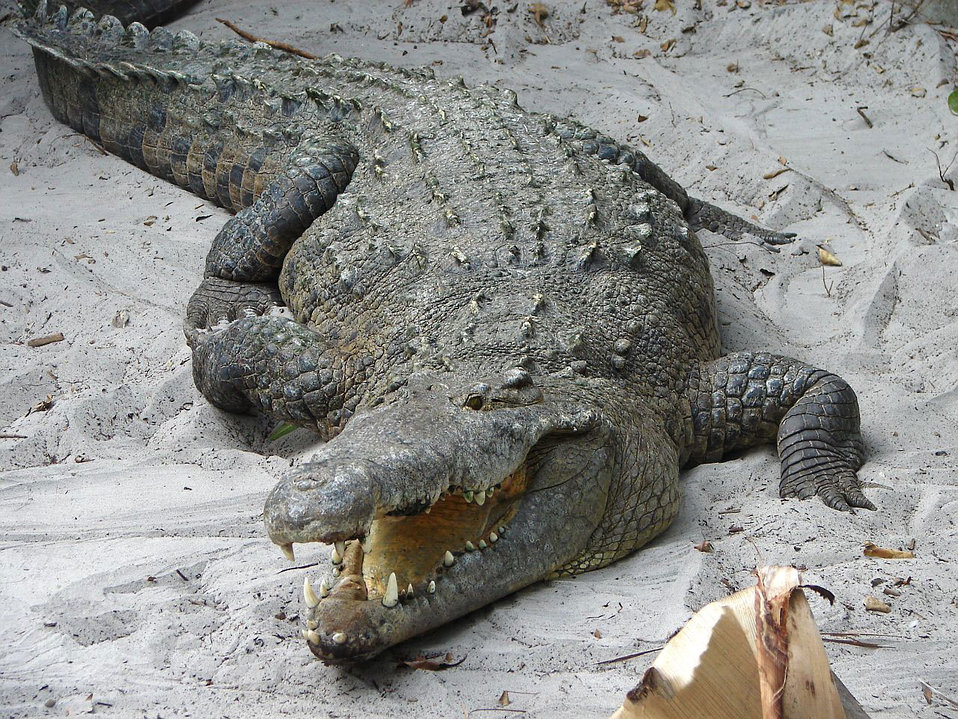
Crocodile

Not a toy,it's real.